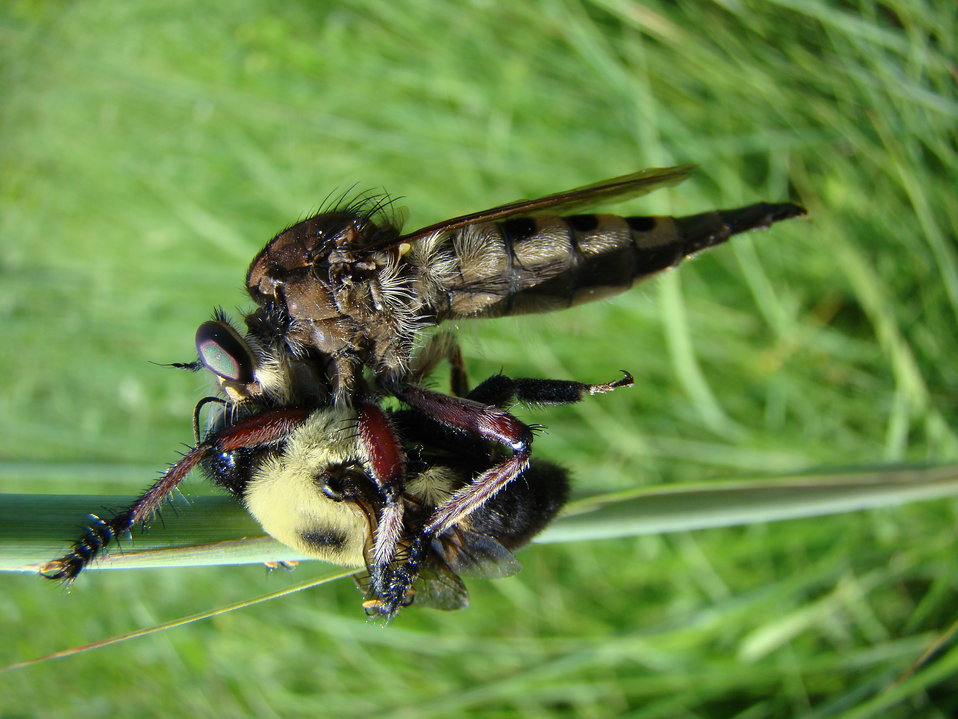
Robberfly With Bumblebee

Robberflies feed on many other insects, including butterflies, moths, grasshoppers, beetles, and, as featured in the photo, bumblebees.